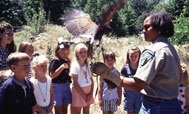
Environmental Education Fire Workshop Timberline High School Fall 2000